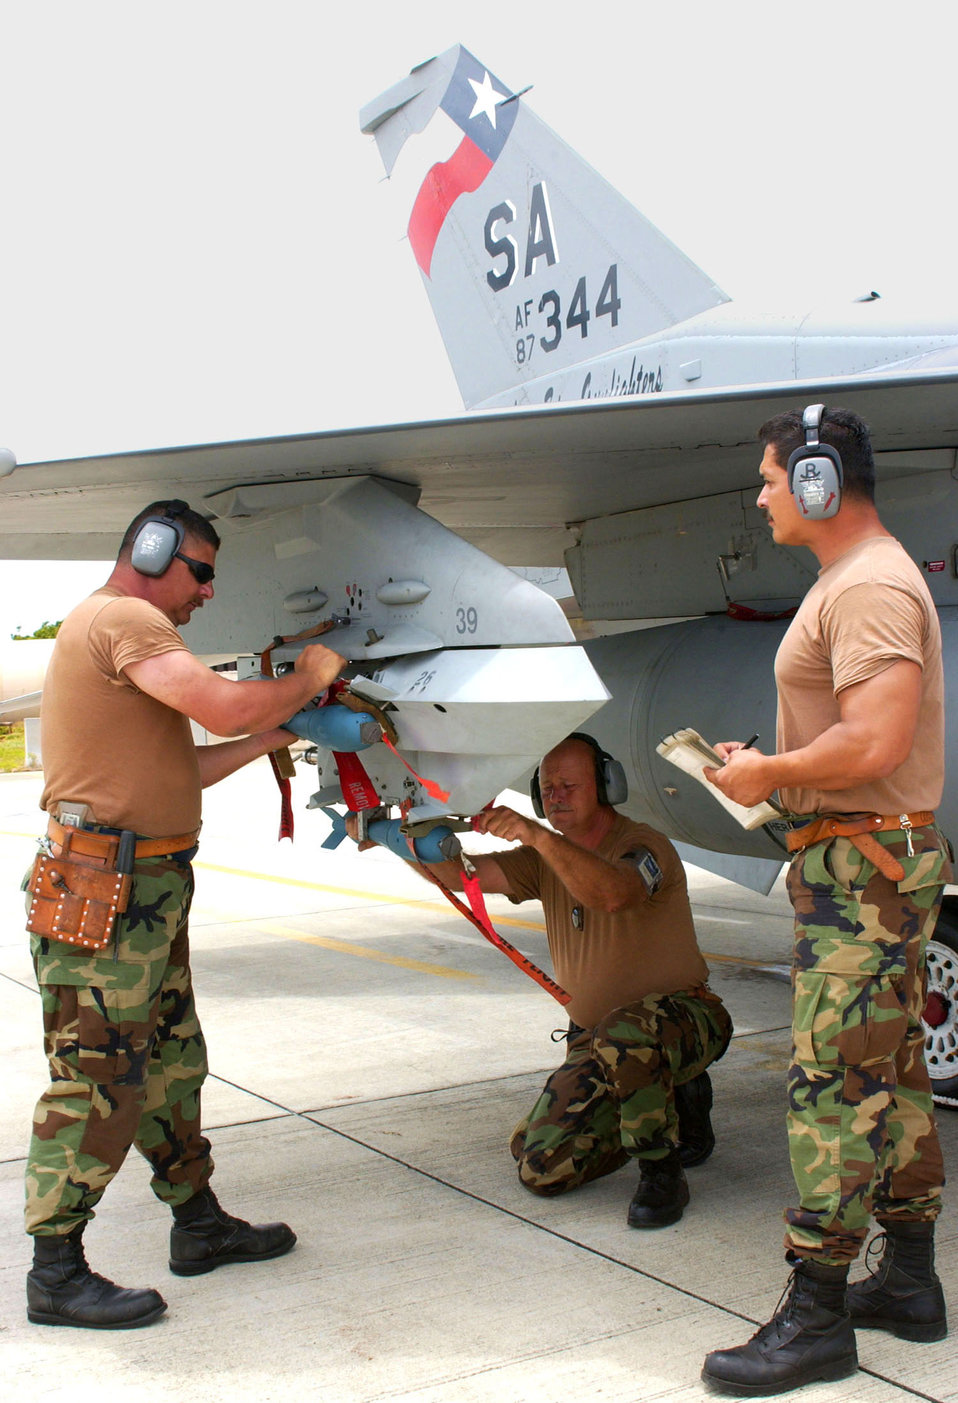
Lone Star Gunfighters in Hawaii

HICKAM AIR FORCE BASE, Hawaii -- A 149th Fighter Wing weapons load team secures BDU-33 bombs to an F-16 Fighting Falcon. The team consists of (from left) Staff Sgts. Donald Trevathan and John Schoonover, and Tech. Sgt. Roy Garza. The aircraft were being readied with the practice bombs for close-air-support training with soldiers.